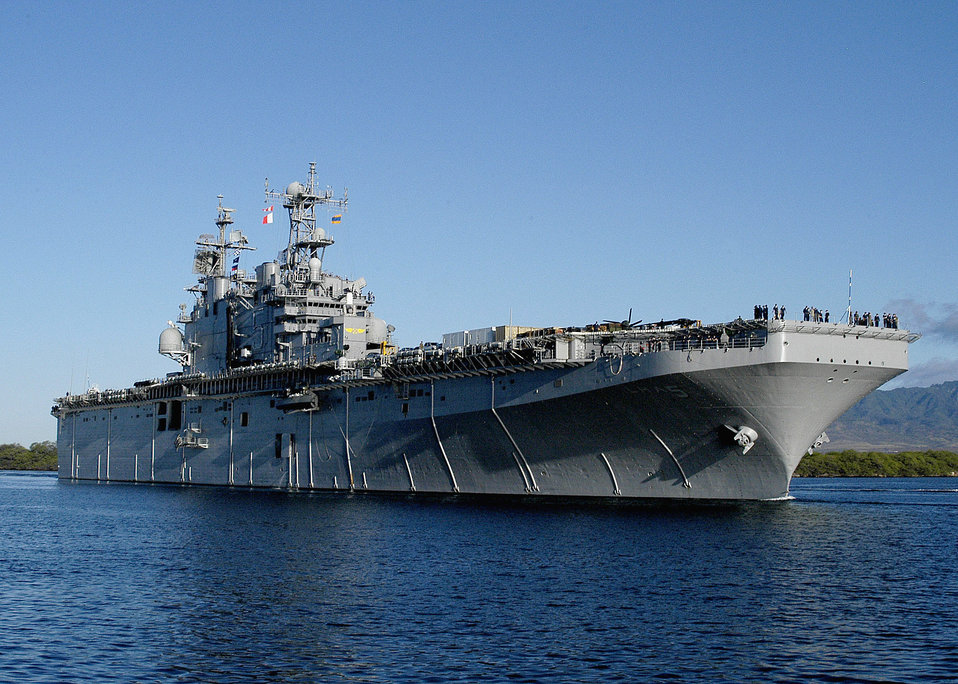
Airmen cross into Navy blue

Fourteen Air Force medical professionals are onboard the USS Peleliu for Pacific Partnership, a four-month humanitarian and civic action mission to several nations in Southeast Asia and Oceania.